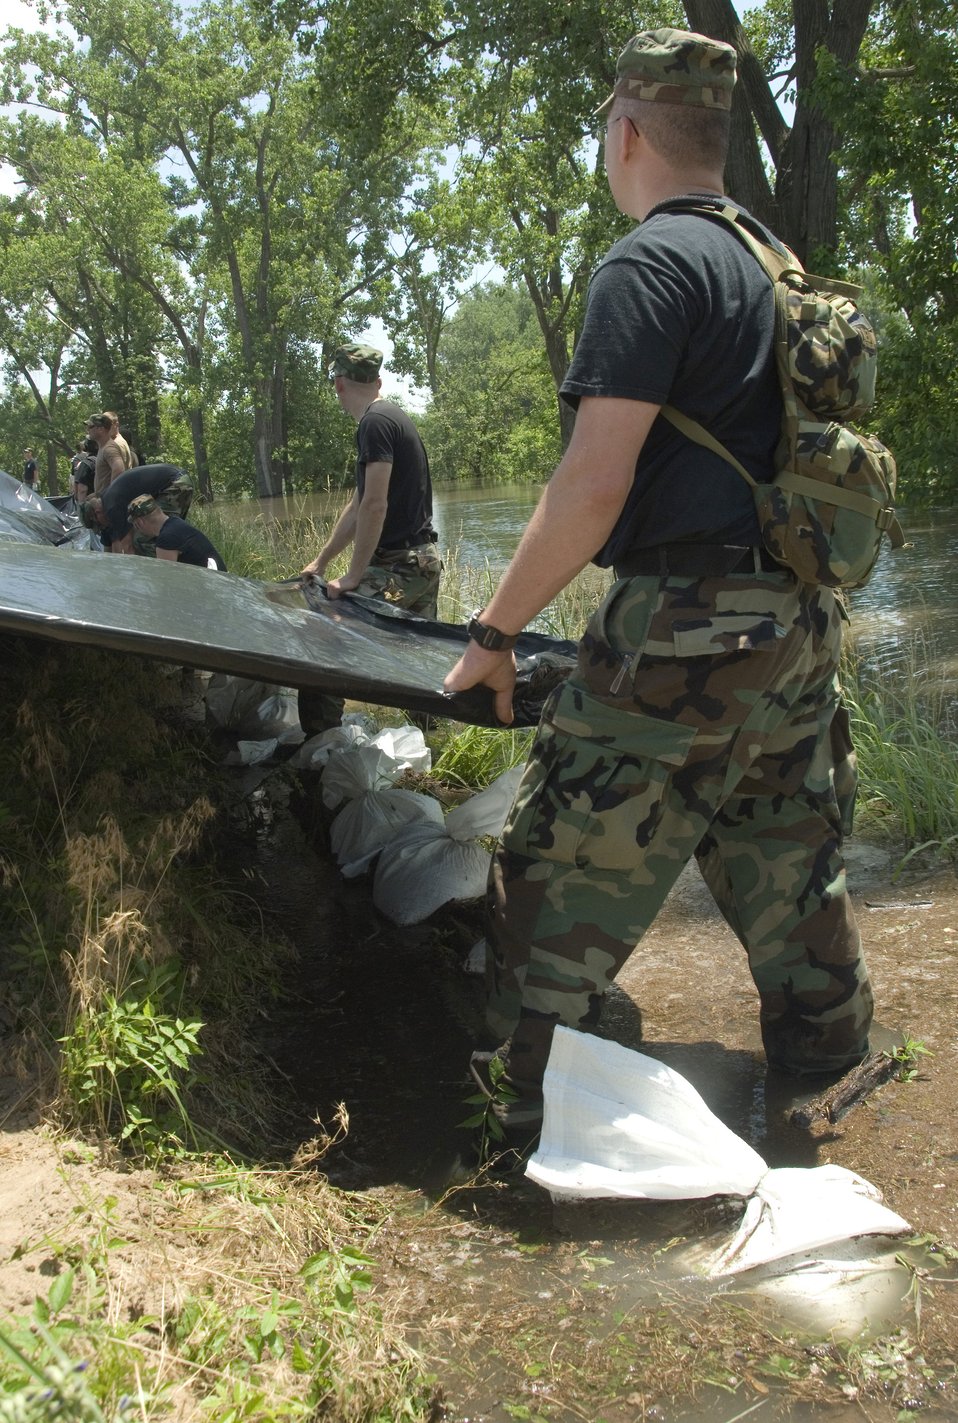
Illinois Air National Guard provides help

Airmen from the Illinois Air National Guard wade in knee-deep water to spread sheets of plastic over reinforced levees along the Mississippi River June 19 near Pleasant Hill, Ill. The plastic sheets prevent erosion that could cause the levee to fail and flood thousands of acres of farmland and homes.